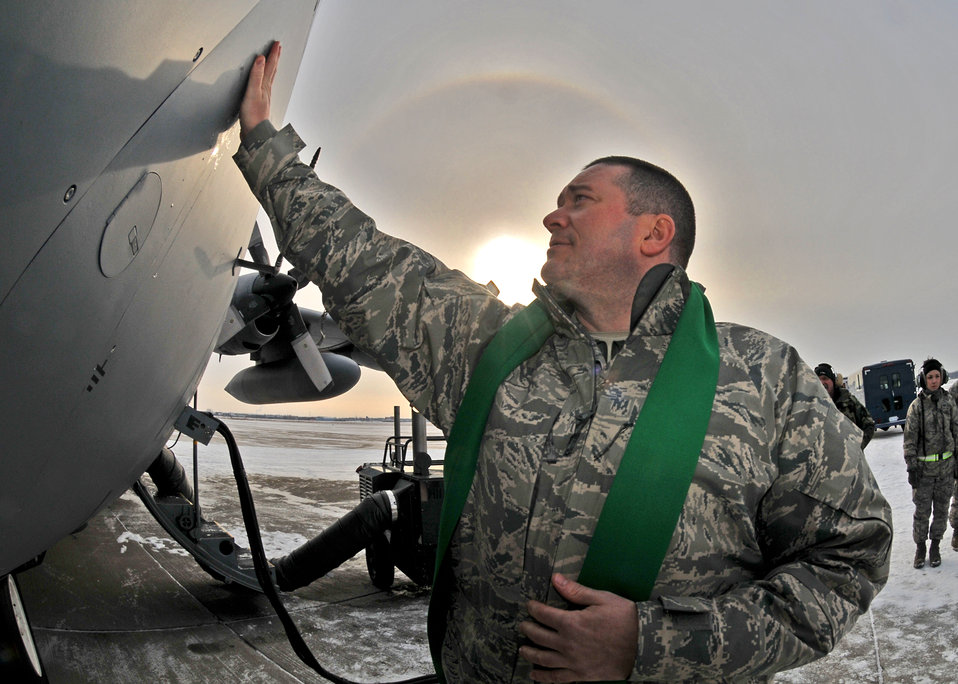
Prepared to deliver

Chaplain (Capt.) James Bastian blesses aircraft on the flightline Jan. 8, 2011, at Air Force Reserve Command's 914th Airlift Wing at Niagara Falls Air Reserve Station, N.Y. He says a prayer for the crew before they begin their mission delivering supplies to Southwest Asia.